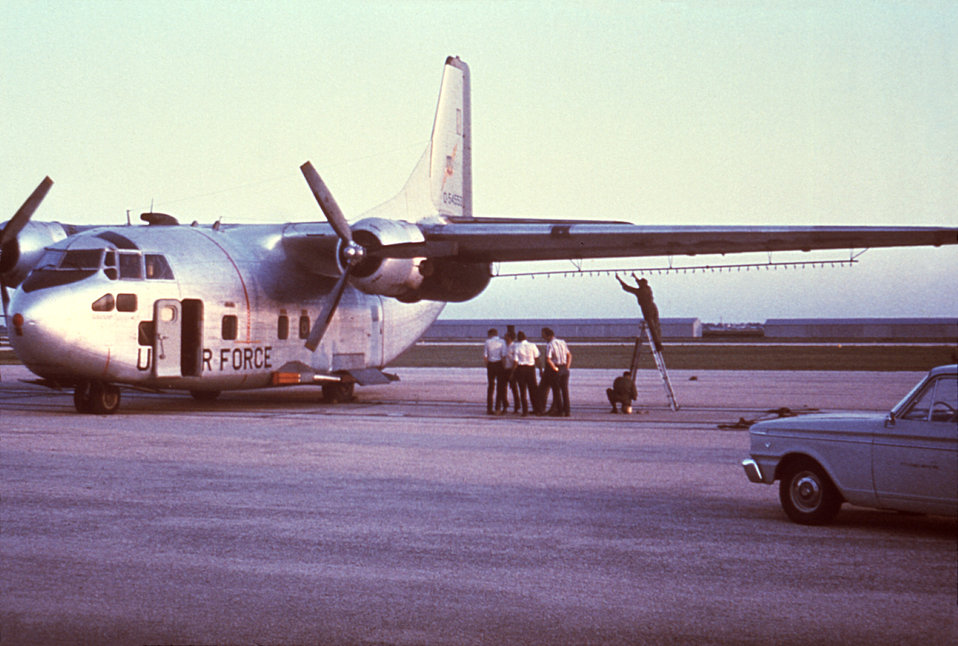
This photograph depicts a C-123 USAF aircraft, which was being outfitted with an insecticidal spray apparatus in order to combat an outbreak of mosquito-borne St. Louis Encephalitis (SLE).